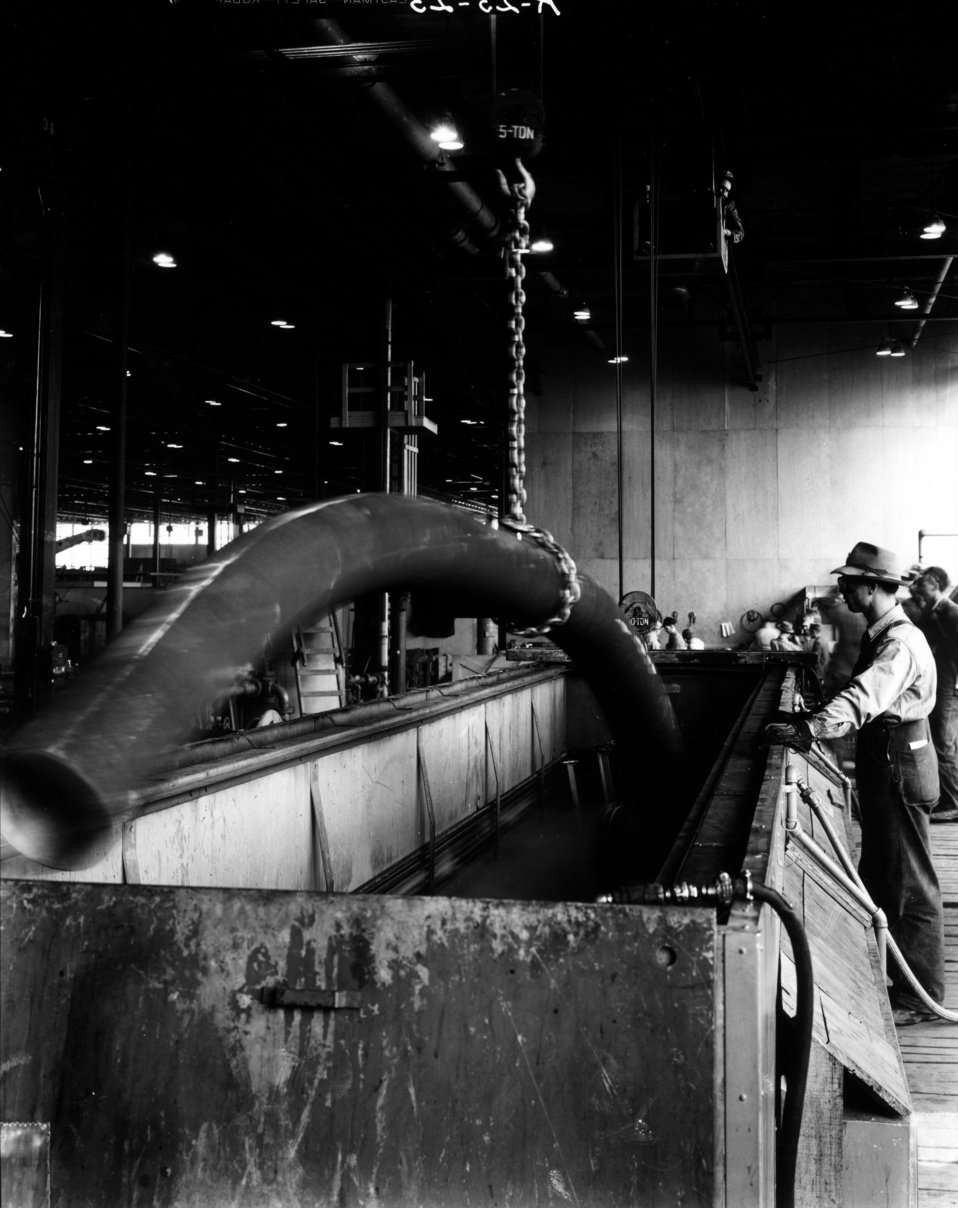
K-25 at Oak Ridge